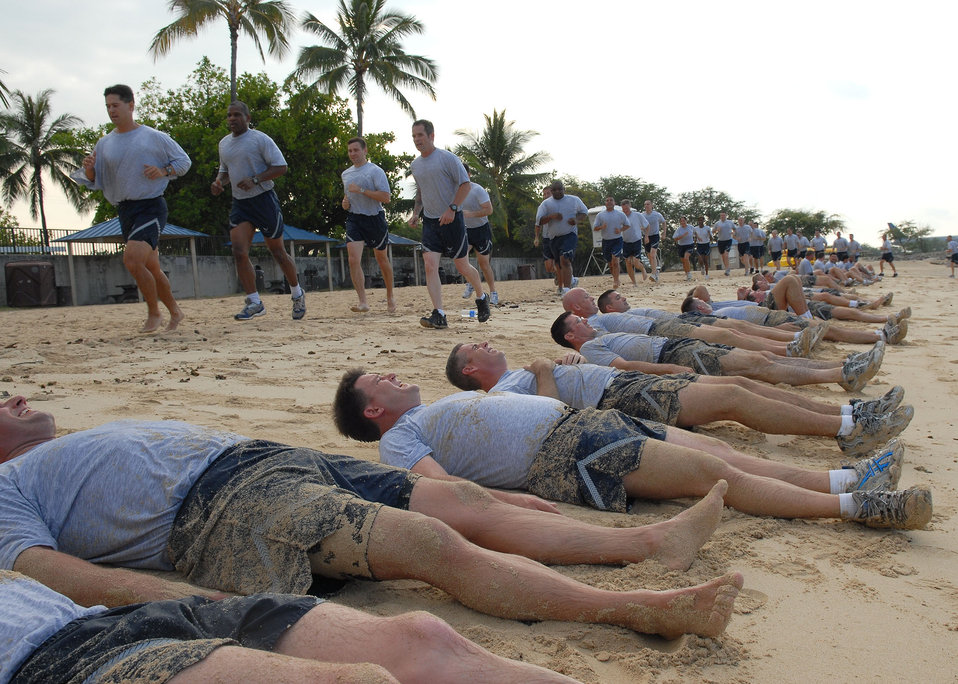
Beach workout

Senior Master Sgt. JJ Little leads a group of Air Force people past another group performing calisthenics May 27 at Hickam Beach near Hickam Air Force Base, Hawaii. Approximately 70 people participated in the physical training session. Sergeant Little is with the Pacific Air Forces Inspector General team.